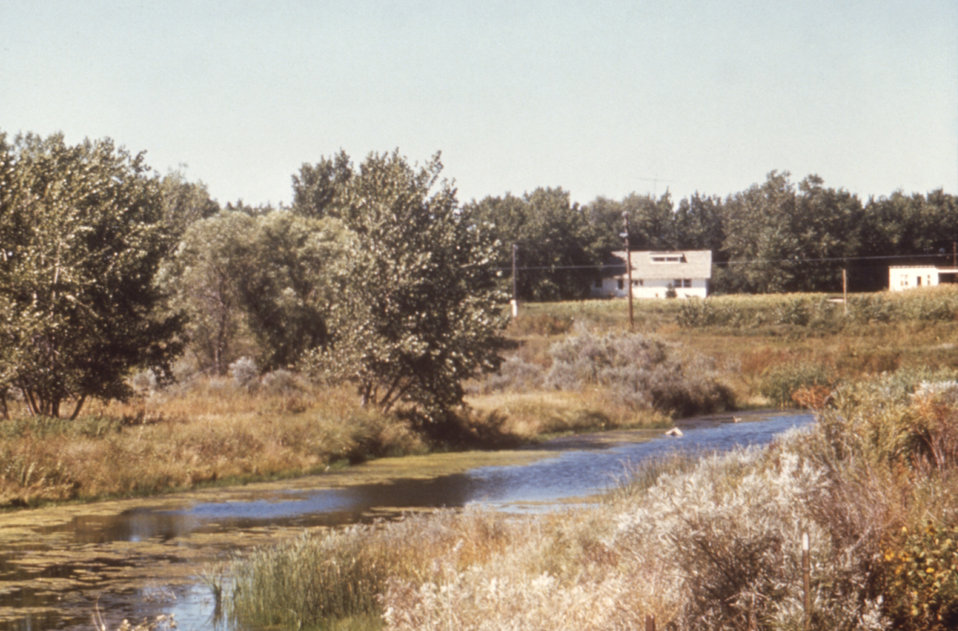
This 1976 photograph shows a U-shaped bend in a river, or ''oxbow'' at the site of the Narrows Project in Colorado.